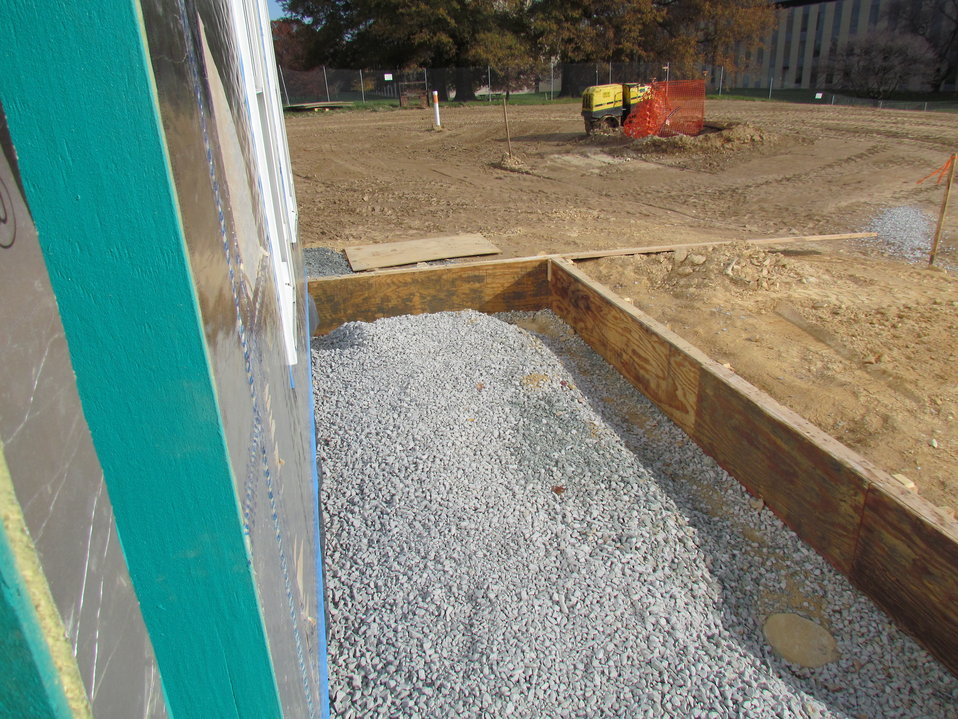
Net-Zero Energy Residential Test Facility - Photo showing the forms in place for the pouring of the front porch's concrete floor.